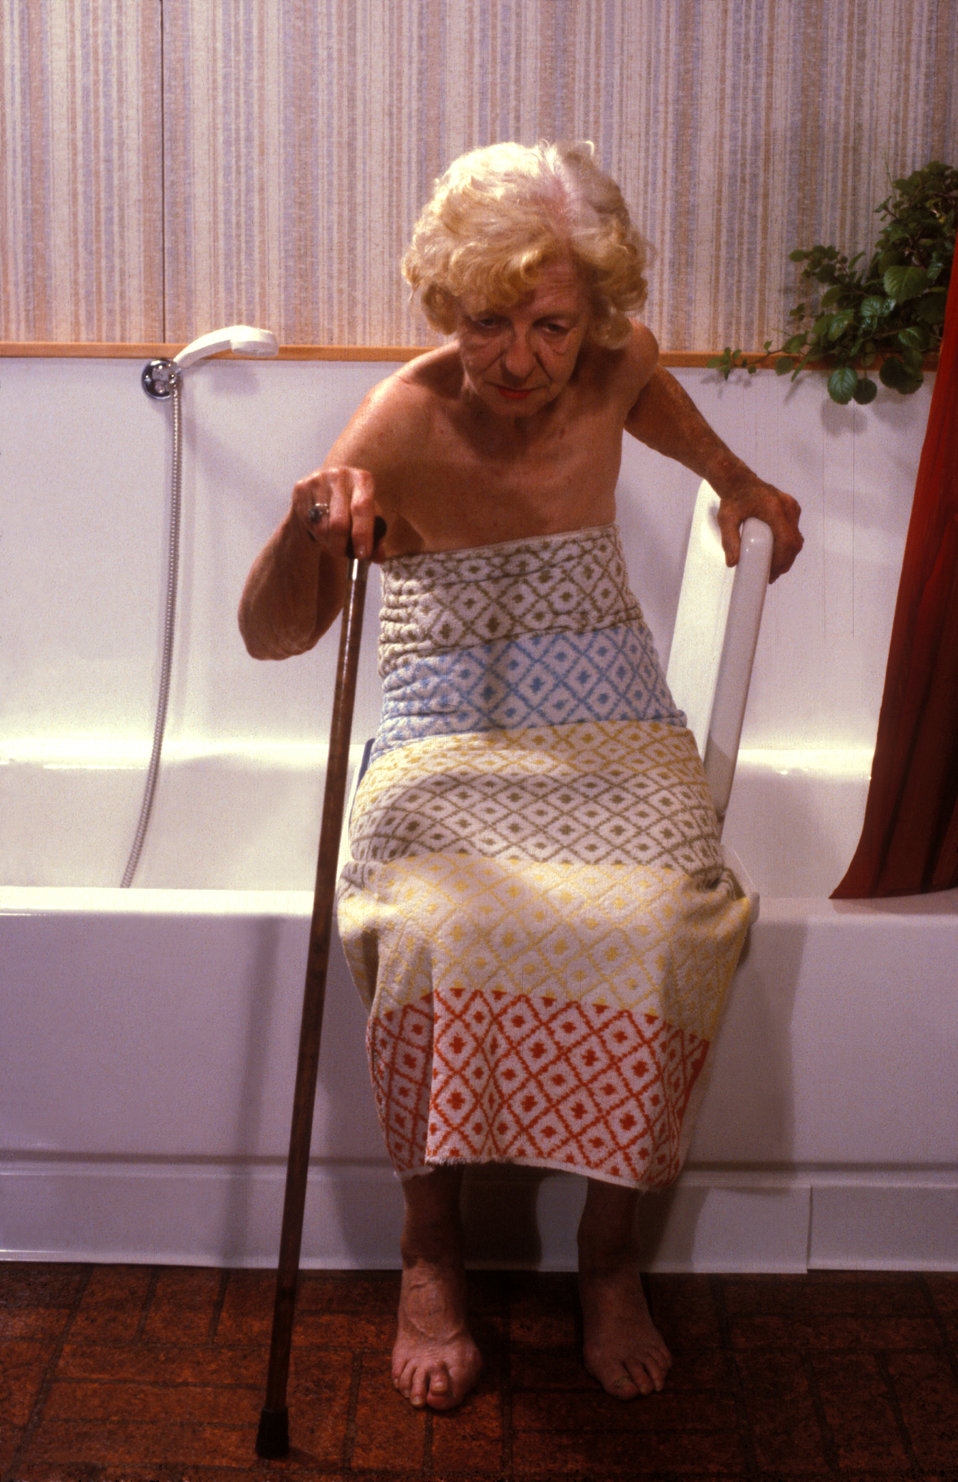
This was one of five images (PHIL# 9170 - 9174), depicting the action of two different mobility-challenged women getting into a bathtub by making use of an assistive in-tub seating apparatus. In this particular view, an elderly woman was either exiting, or entering the bath tub, while she was grasping the back support of the in-tub seat. With back support and armrests, a bathtub seat could be clamped to the tub rim for stability, and acted as an effective, popular solution for many people with disabilities. These designs work best for those who could transfer from their mobility devices, or could walk, but have difficulty standing for extended periods of time because of balance, or stamina limitations.